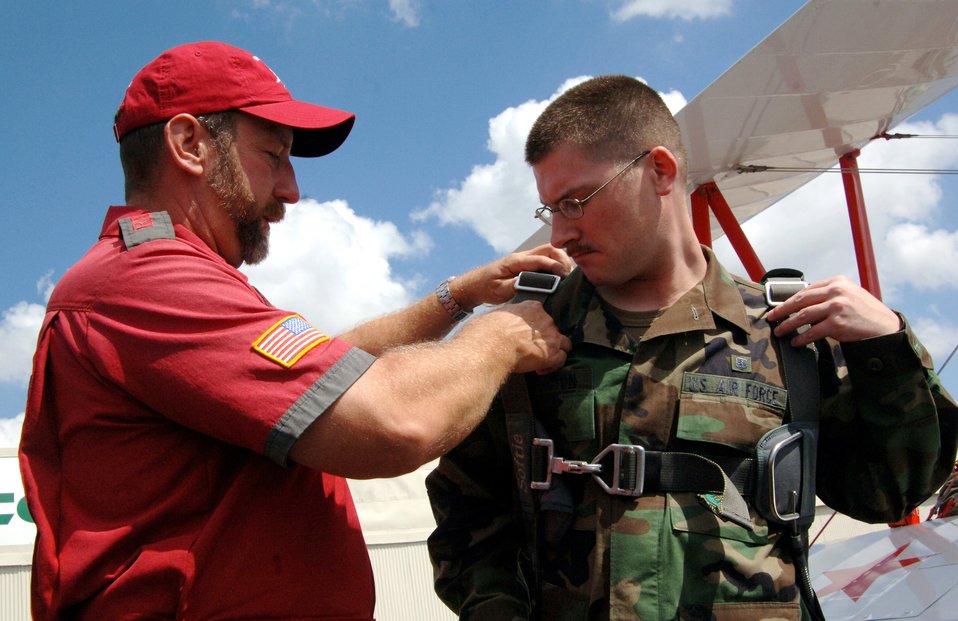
Vintage Flight

Pilot Bryan Regan, left, helps Senior Airman Robert Arrington with a parachute before his incentive flight with the Red Baron Pizza Squadron biplanes at Del Rio, Texas, Oct. 1. The Red Barons are vintage